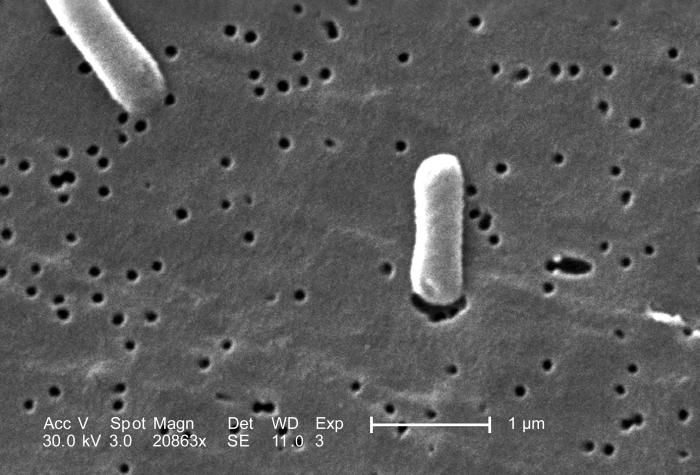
At a very high magnification of 20863X, this scanning electron micrograph (SEM) revealed two Gram-negative bacilli, or rod-shaped Salmonella sp. bacteria. The genus Salmonella is a member of the taxonomic family, Enterobacteriaceae, and approximately 2000 serotypes of this genis are known to cause disease in human beings. See PHIL 10569 for a colorized version of this image.What sort of germ is Salmonella?